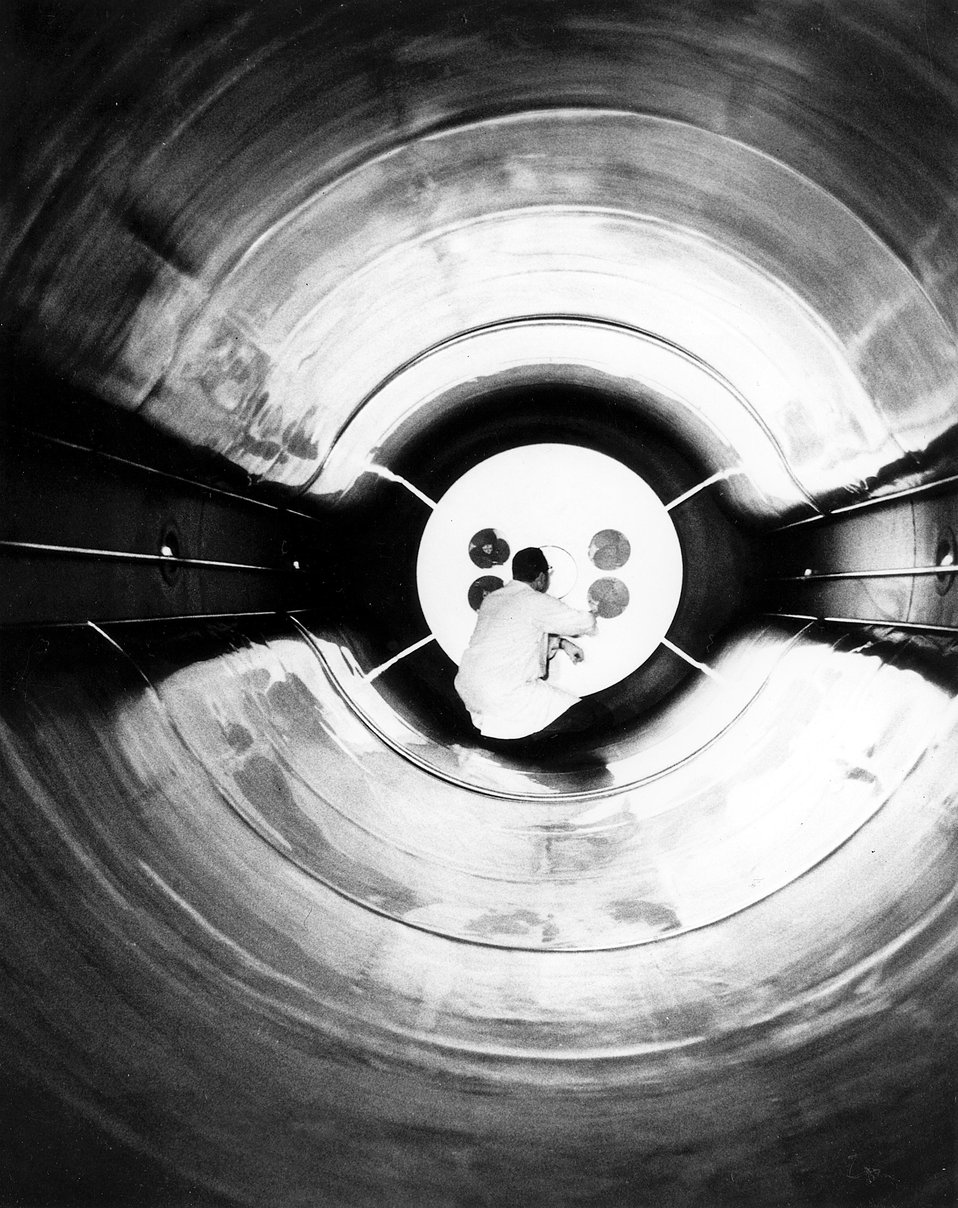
The interior of the tank which surrounds Argonne's 4 MV high-current dynamitron during operation.
C.1970